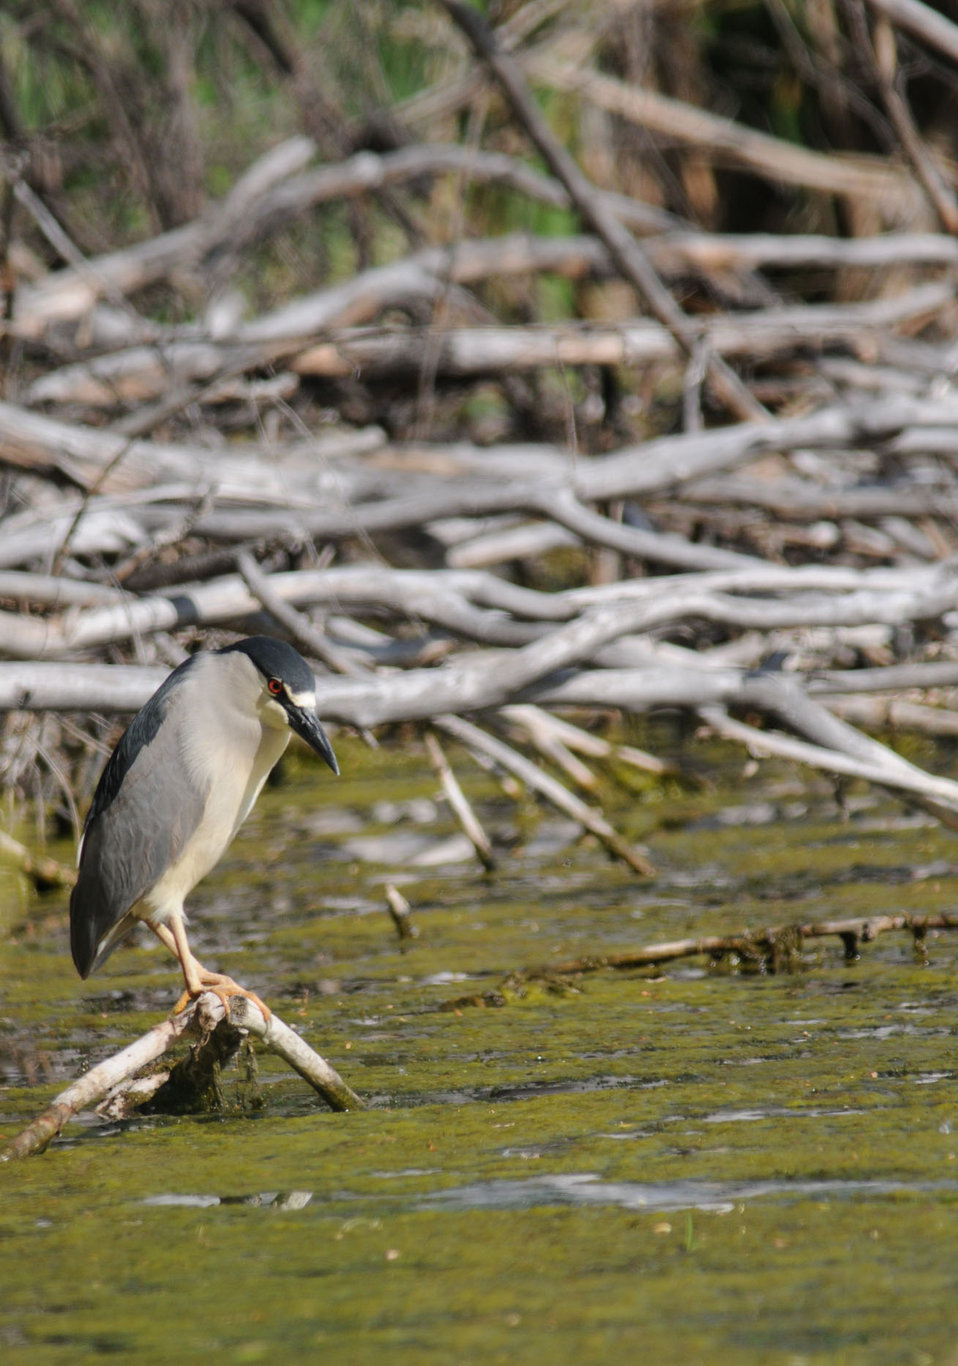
Black Crowned Night Heron